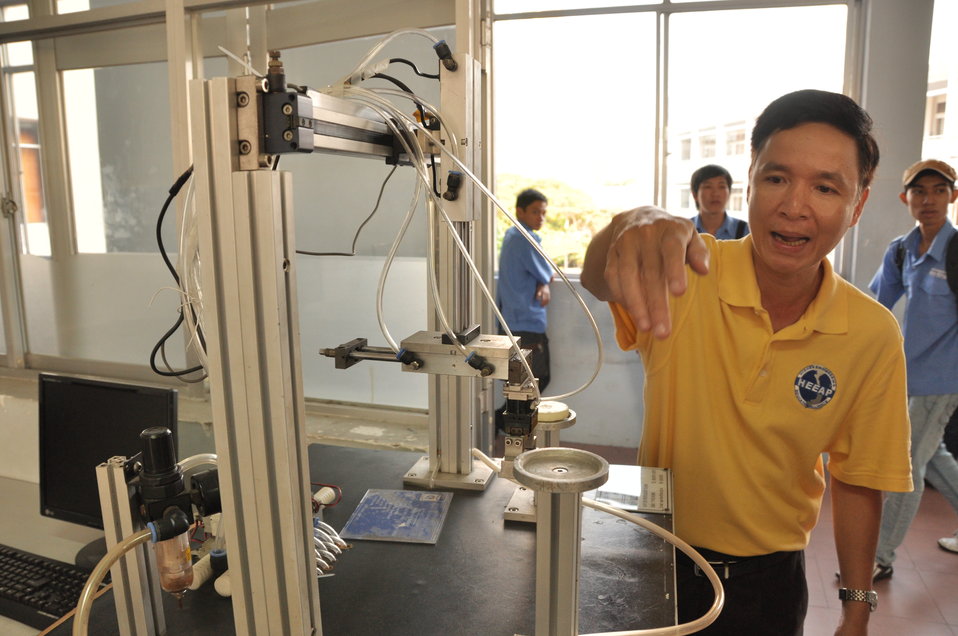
HEEAP Partner, Cao Thang Technical College

Faculty trained with support of HEEAP
Ho Chi Minh City, January 12, 2013